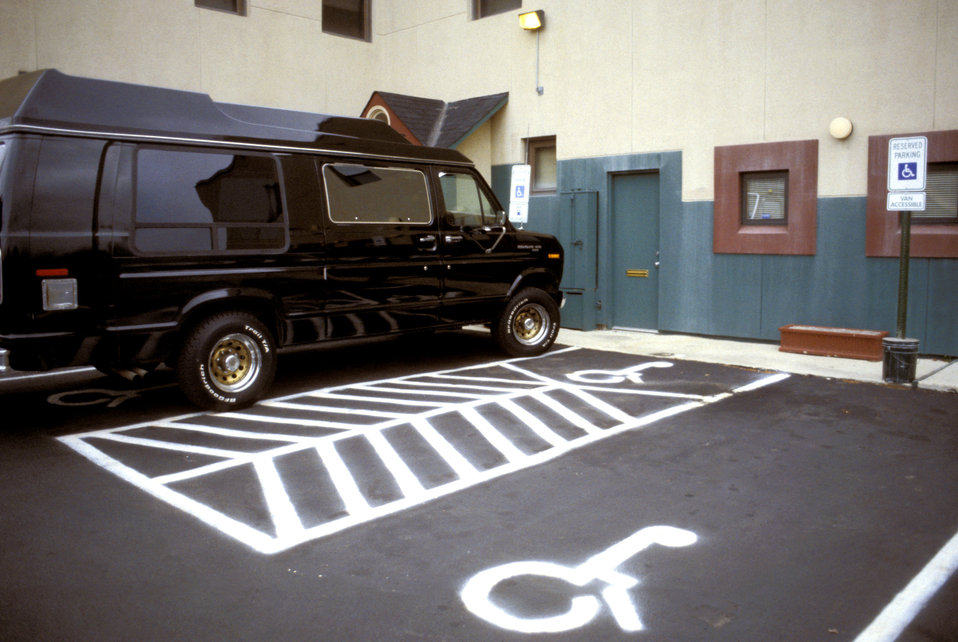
This was the first in a series of six images (PHIL# 9068 - 9073) depicting a wheelchair-seated woman in the process of exiting a wheelchair lift-equipped van parked in a van-accessible parking space. The space displayed both a pole-mounted sign, as well as a designated ground symbol, each adorned with the international symbol of accessibility. In addition, a wide aisle next to the van's parking space had been defined by striping on the ground, allowing ample space for the person using the side-mounted lift to exit safely and efficiently. The images showed the individual having first backed onto the lift, then descending to the ground. The woman then exited onto the striped space next to the van.